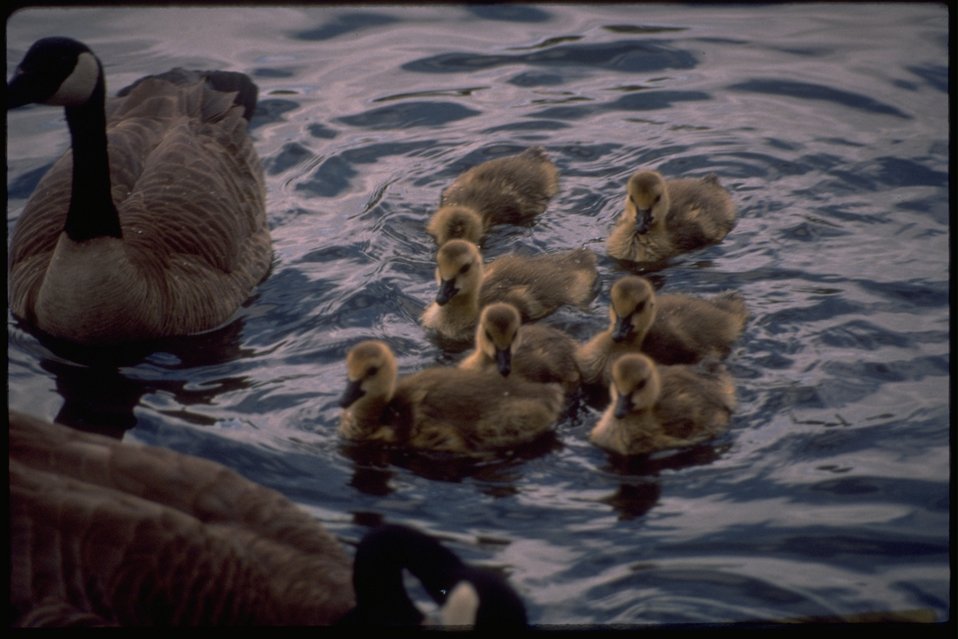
A mother goose with her goslings.